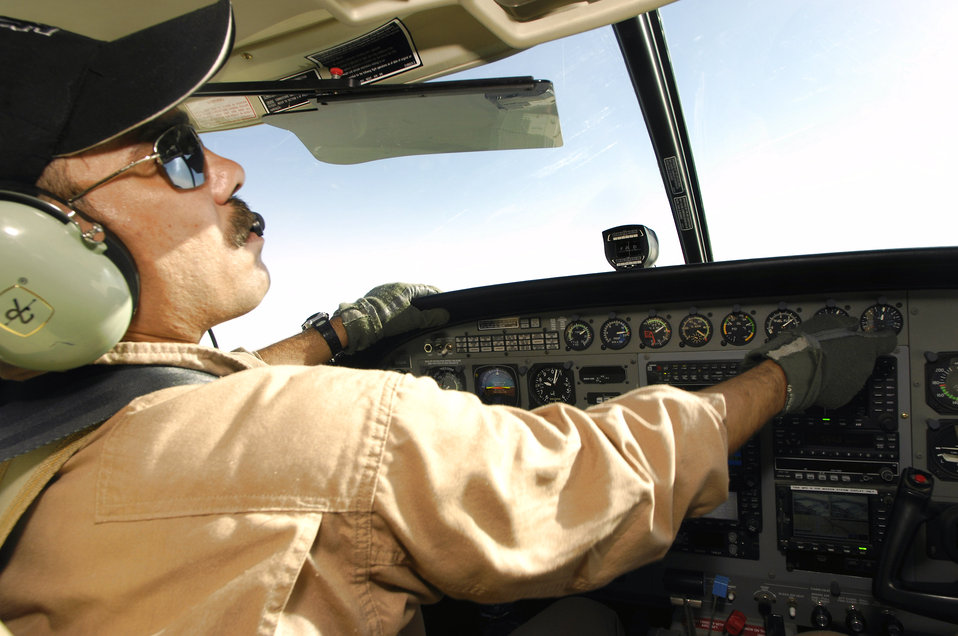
Airmen help Iraqi pilot earn his wings

An Iraqi pilot pre-flights a C-208 Cessna Caravan for a training flight with U.S Air Force Lt. Col. Terry Wheeler from the 870th Air Expeditionary Advisory Squadron at Kirkuk Regional Air Base, Iraq, July 19. Colonel Wheeler is an instructor pilot training Iraqi pilots to fly the C-208 Cessna Caravan. The Caravan is equipped with a surveillance package for intelligence surveillance and reconnaissance work.